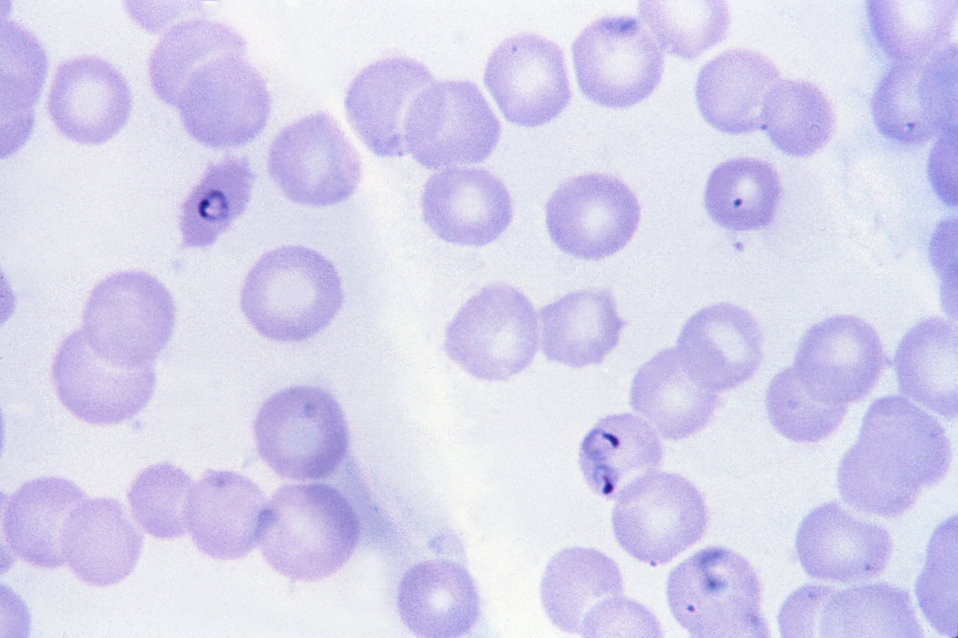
This thin film Giemsa stained micrograph depicts a ring-form P. falciparum trophozoite.